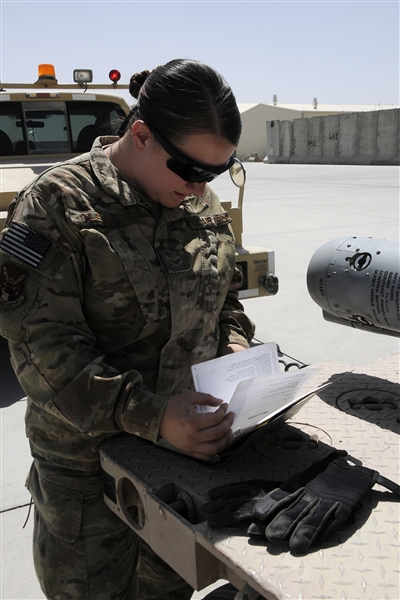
Warrior Airmen

Airman 1st Class Rhiannon O'Leary reviews paperwork during delivery of munitions to the flightline at Kandahar Airfield, Afghanistan, June 14, 2012.